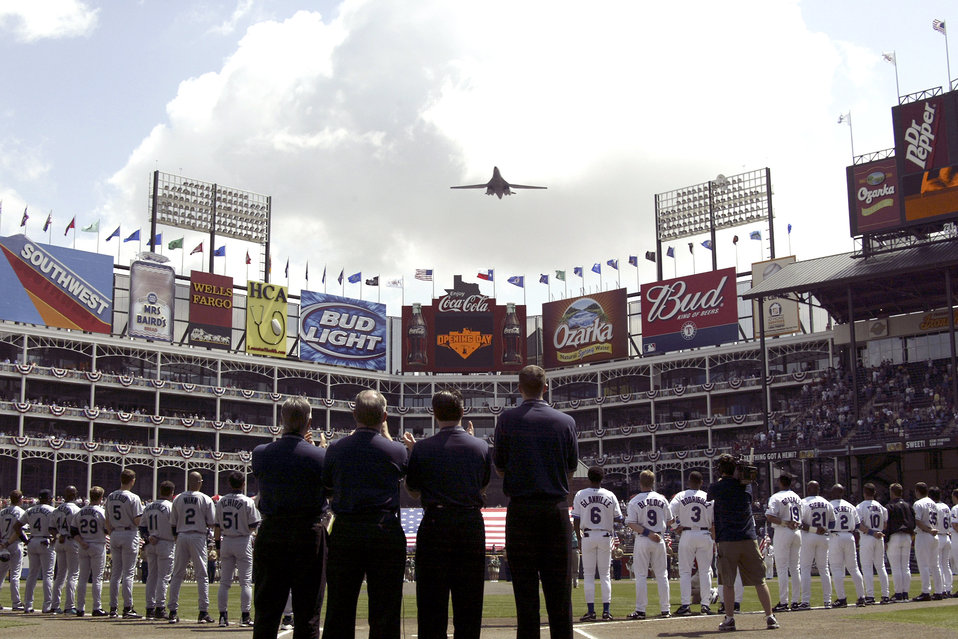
Lancer flyover

ARLINGTON, Texas -- A B-1B Lancer performs a flyover at the Texas Rangers first season home game here, April 4. The B-1B was from the 28th Bomb Squadron at Dyess Air Force Base. The B-1B was flown by Maj. Michael Jackon Jr., pilot, and co-pilot, 1st Lt. Jade Yim and weapons system officers, Capt. Daemon Hobbs and Capt. Scott Koeckritz. This is the third year Dyess B-1Bs have opened the Rangers season opener at home.